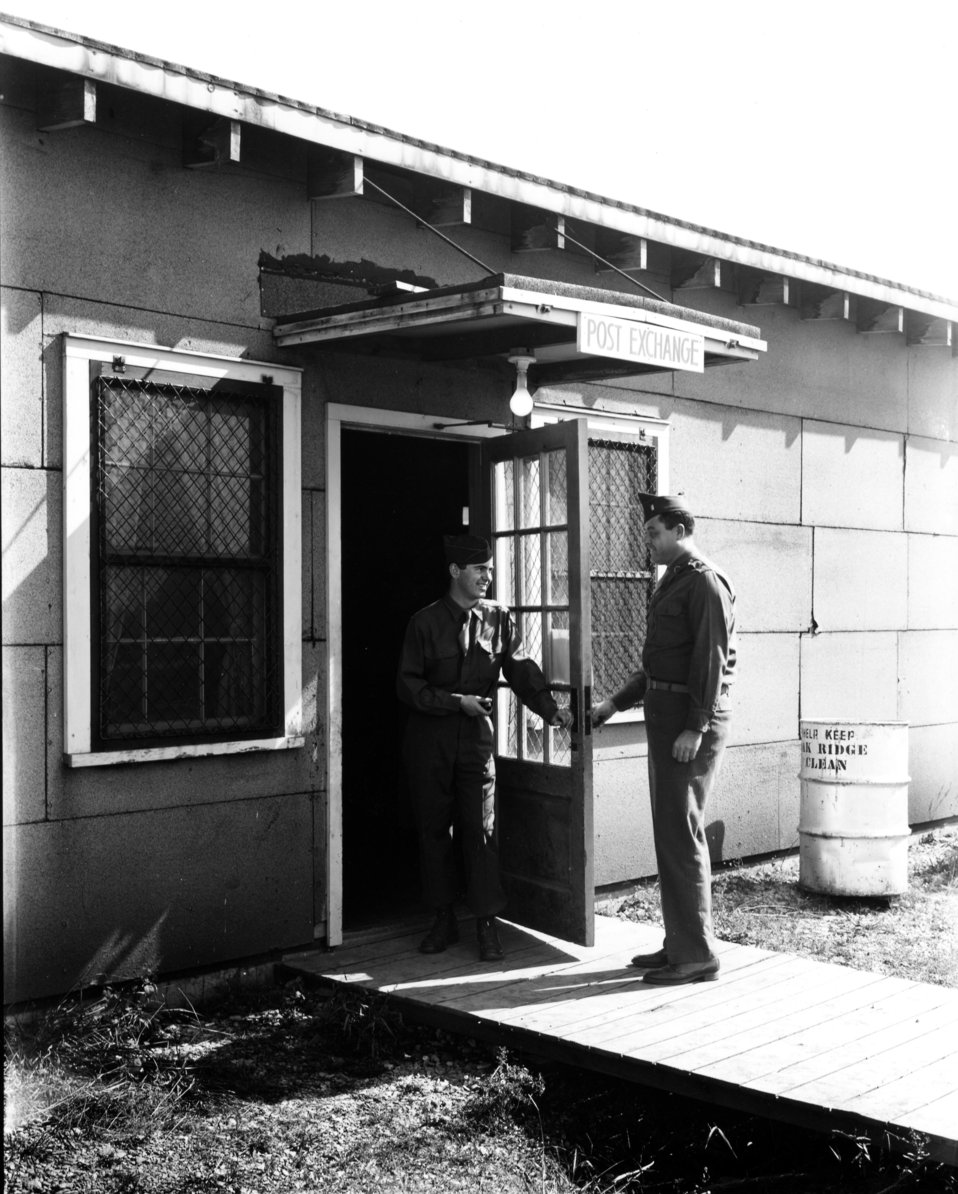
Army Activity at Oak Ridge